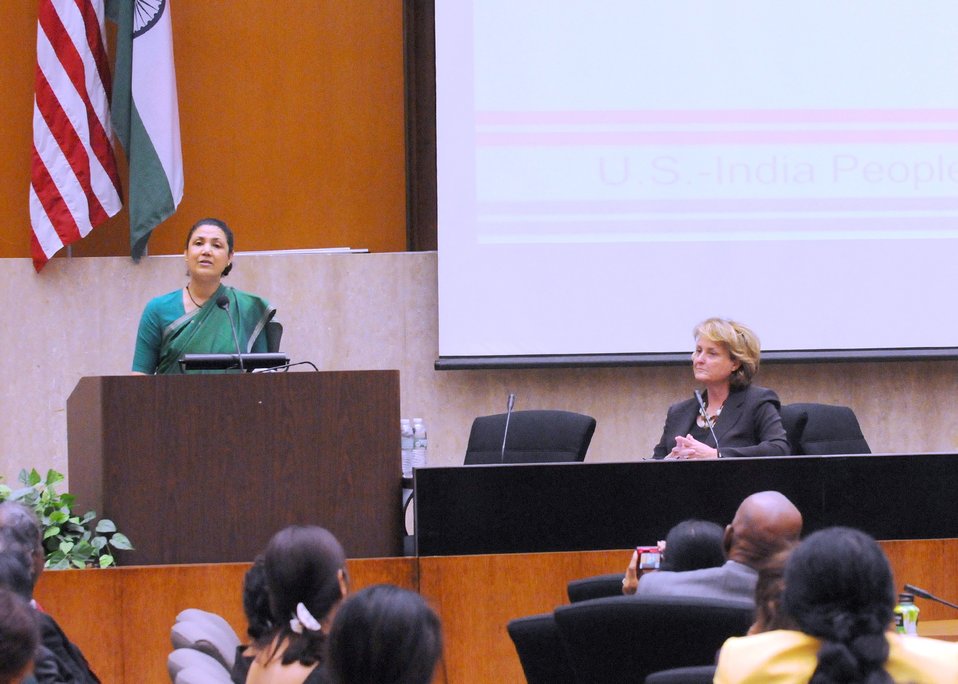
Indian Ambassador to the U.S. Shankar Delivers the Closing Remarks

Indian Ambassador to the U.S. Meera Shankar, with U.S. Under Secretary of State for Public Diplomacy and Public Affairs Judith McHale, delivers the closing remarks at the U.S.-India People to People Conference held at the U.S. Department of State in Washington, D.C., on October 28, 2010.